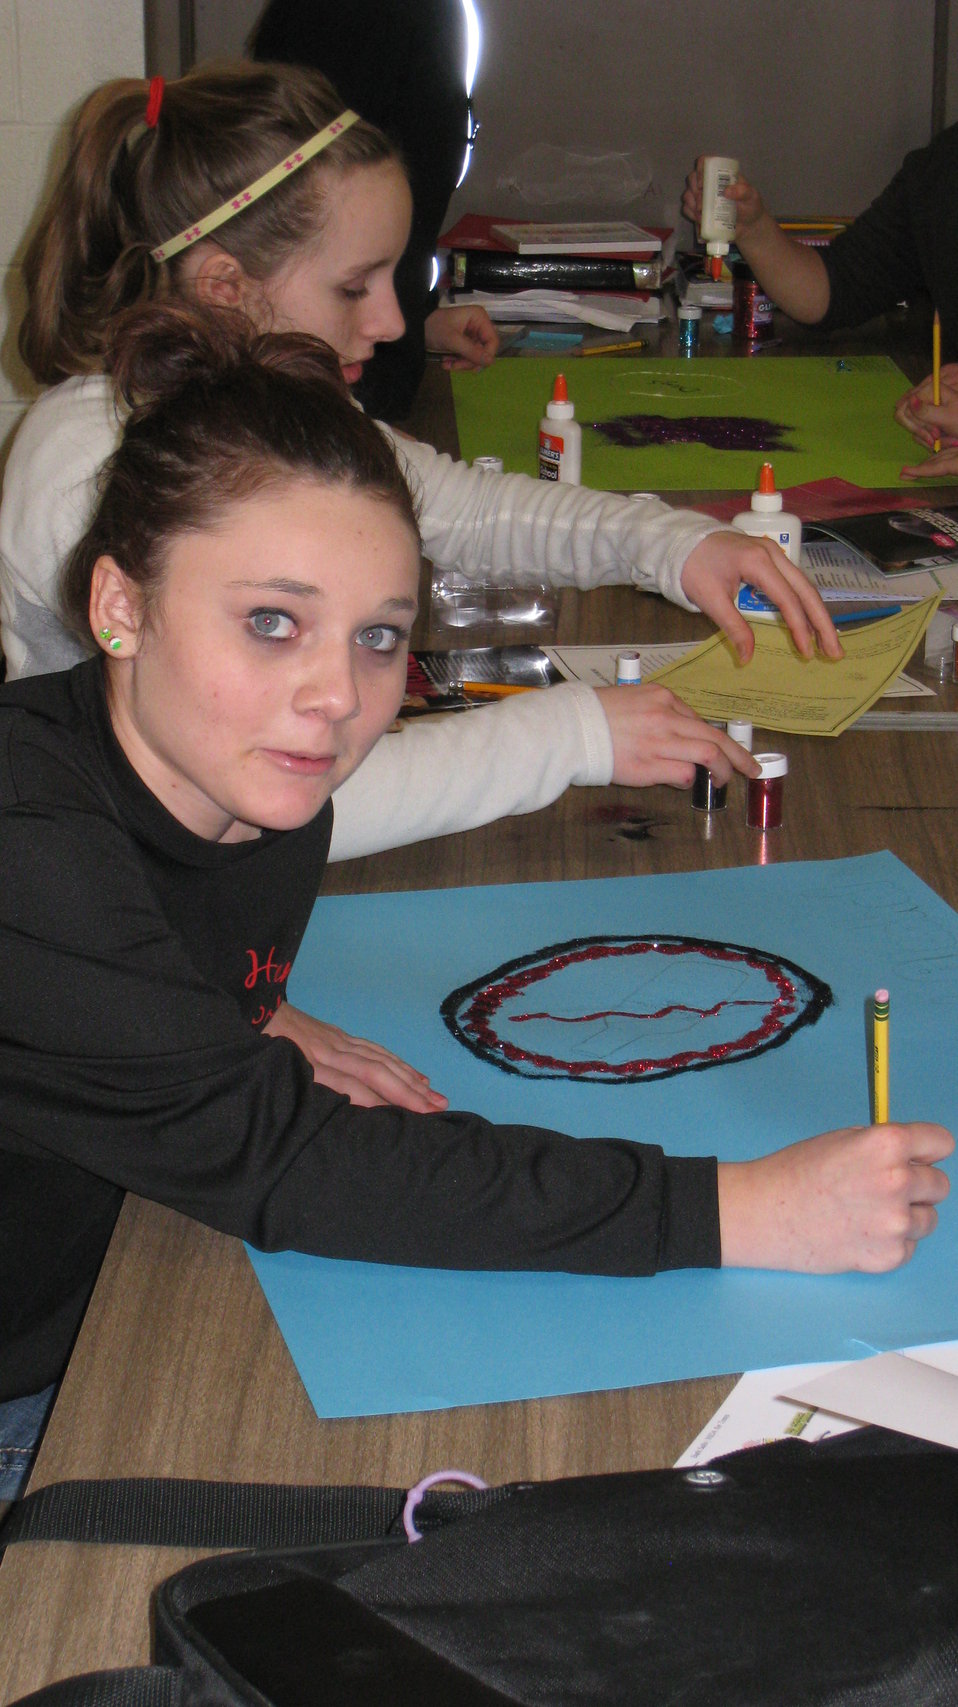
YLC: Van Buren County's NDFW Event

Teenagers from the Van Buren County SAFE Coalition's, Youth Leadership Council (YLC) in Keosauqua, Iowa participate in various events during National Drug Facts Week, 2014.